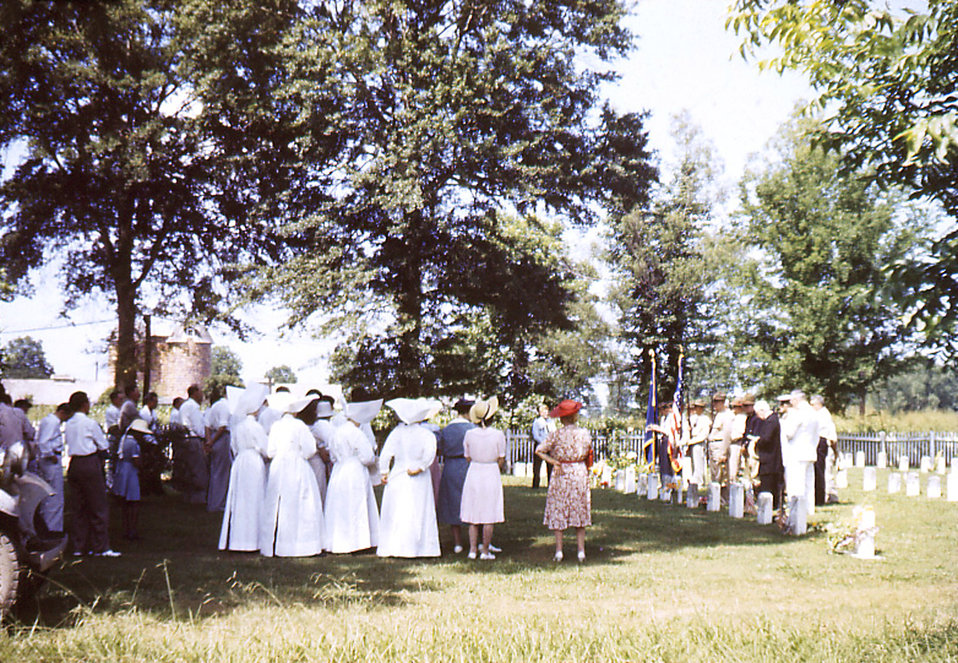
Depicted in this historic image was a Memorial Day celebration on the grounds of the Carville, Louisiana Leprosarium, which was considered a very special occasion in which everyone participated. The local American Legion took part on the march to the cemetery, whereupon, services were conducted by both chaplains, and where approximately 500 patients were buried. The cemetery was opened in 1922 when the Federal Government took over the leprosarium's management from the State of Louisiana.This photograph showed the "Sisters' of Charity" quarters, which housed the Sisters who were members of the leprosarium staff. Currently there are 21 Sisters on staff. The first group of four Sisters of the order founded by St. Vincent de Paul, and officially named Daughters of Charity, arrived at Carville, April 27, 1896, with Sister Beatrice Hart in charge. The sisters volunteered their services, in order to nurse the sufferers of leprosy who'd sought help at the leprosarium.